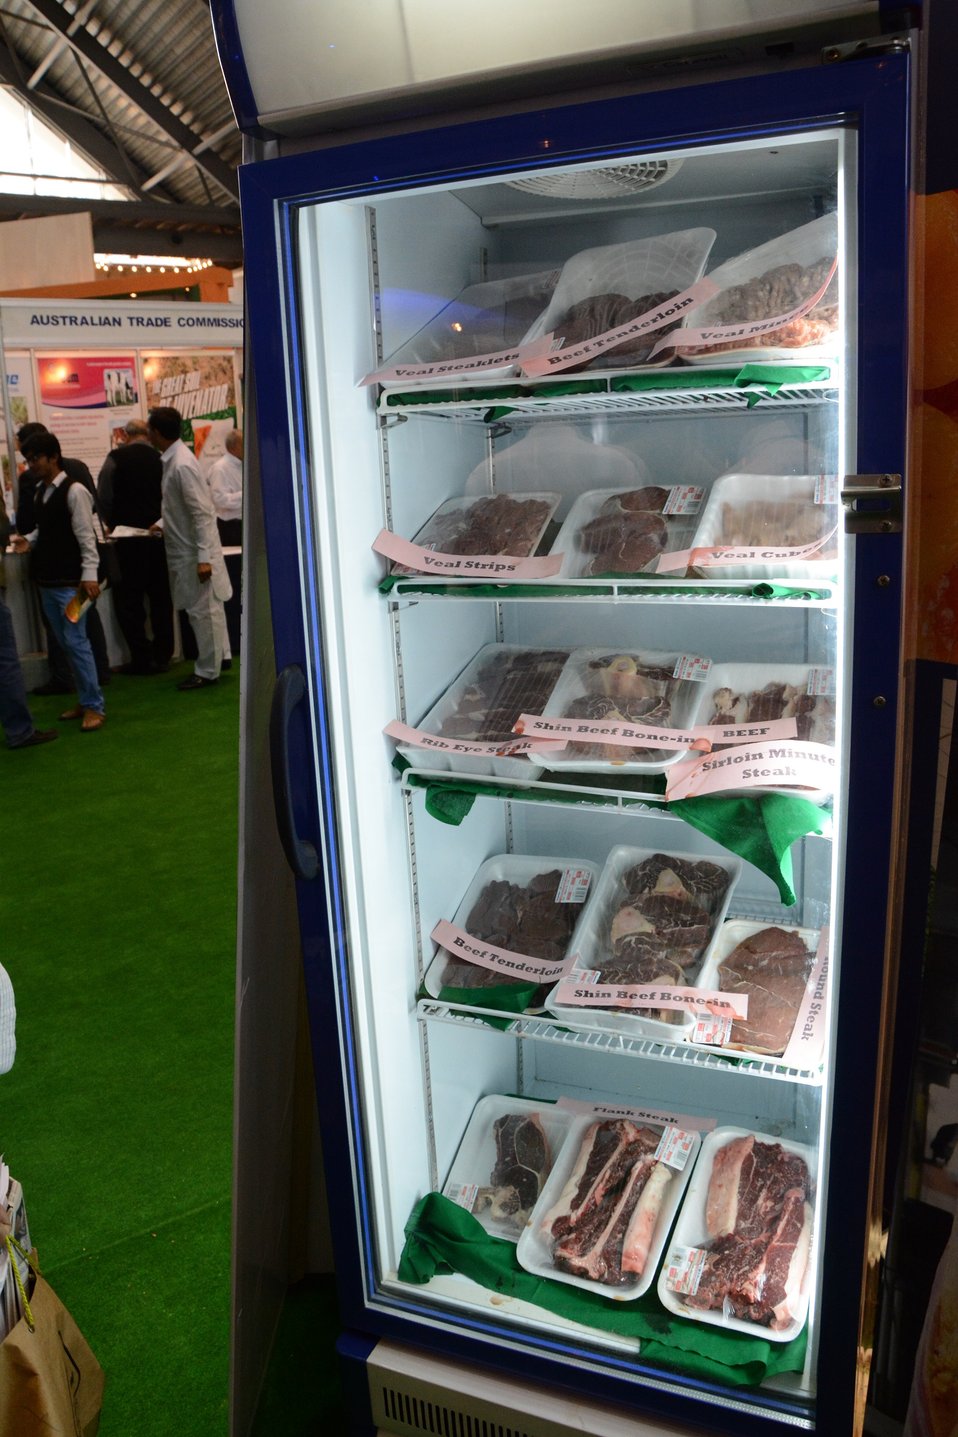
TAP12